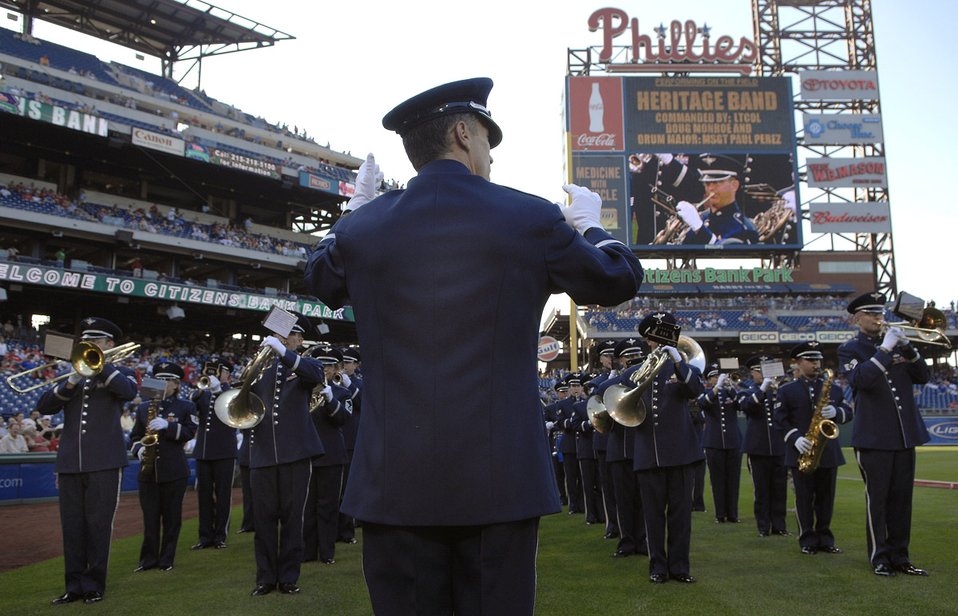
The Philadelphia Phillies saluted the Air Force

The U.S. Air Force Heritage of America Band plays the Air Force song during pre-game activities at the Philadelphia Phillies - Colorado Rockies game May 26. Activities at the game were held in conjunction with Air Force Week-Philadelphia. The week is designed to broaden awareness of the U.S. Air Force's role in the war on terrorism and strengthen support for Airmen serving worldwide in defense of freedom.